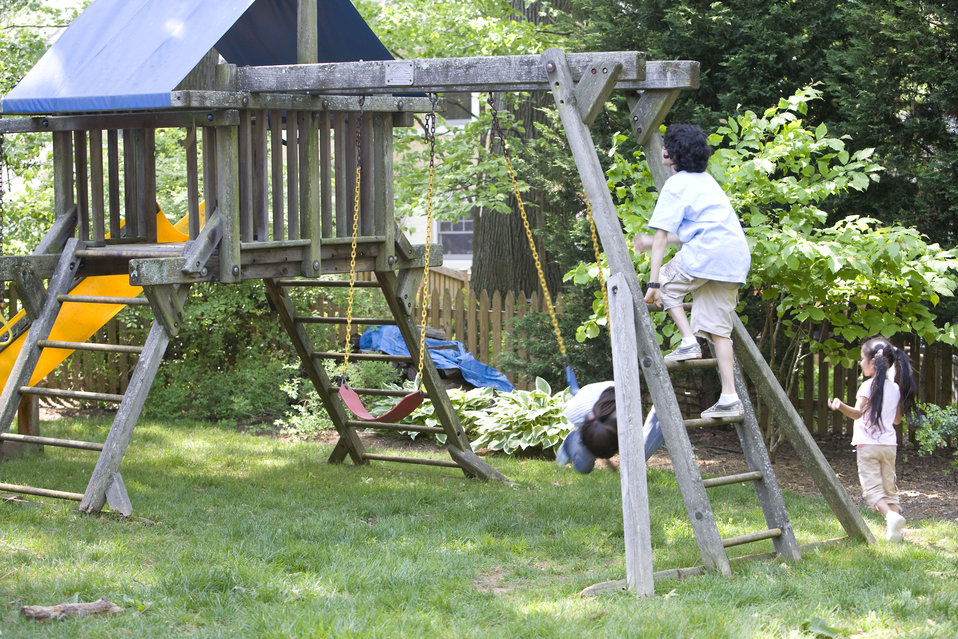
Children love playing outside, and these children were thoroughly enjoying their wooden swing set, and all were having fun in the fresh outdoor air, and the beautiful weather. It's important to note that older wooden playsets may have been treated with arsenic and/or creosote, and therefore, parents need to know if these chemicals were used in their manufacture.